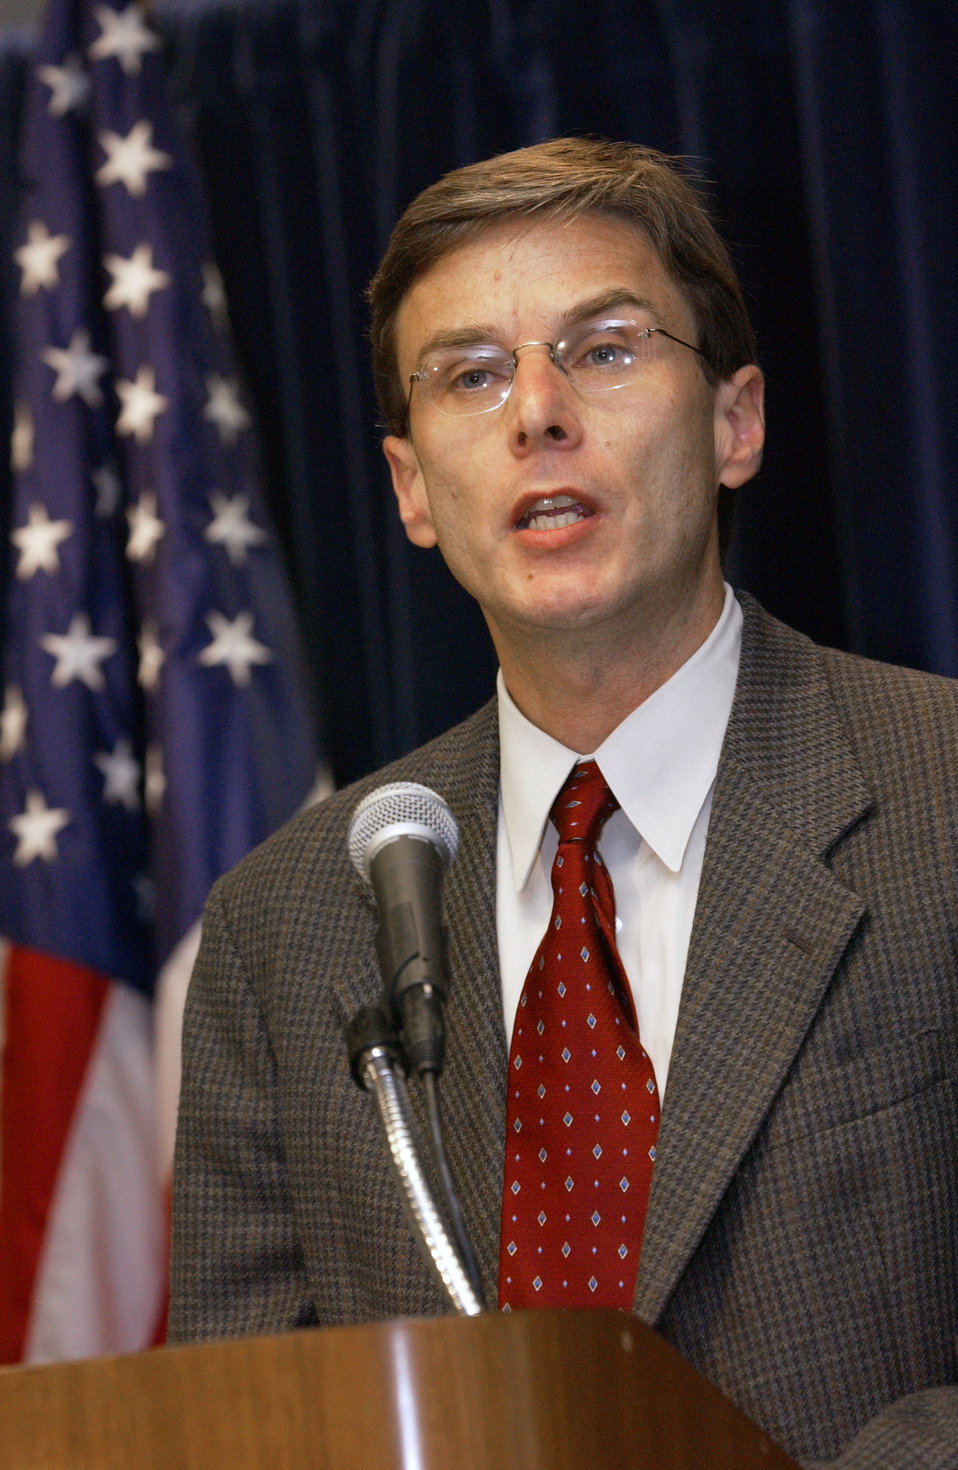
This was a Monkeypox Update press briefing presented by Dr. David Fleming, June 11, 2003.